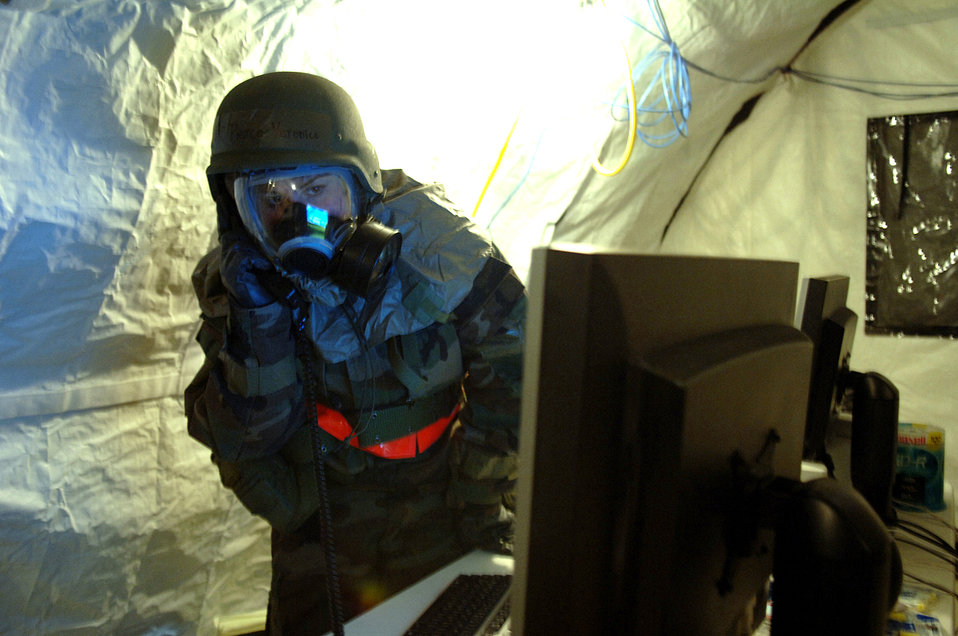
Continuing work

DAVIS-MONTHAN AIR FORCE BASE, Ariz. (AFPN) -- Airman 1st Class Veronica Pierce reports the condition of tent personnel to the communications squadron unit control center. Reporting troop tent conditions is part of exercise Bushwacker 06-01. Airman Pierce is with the 355th Communications Squadron here.